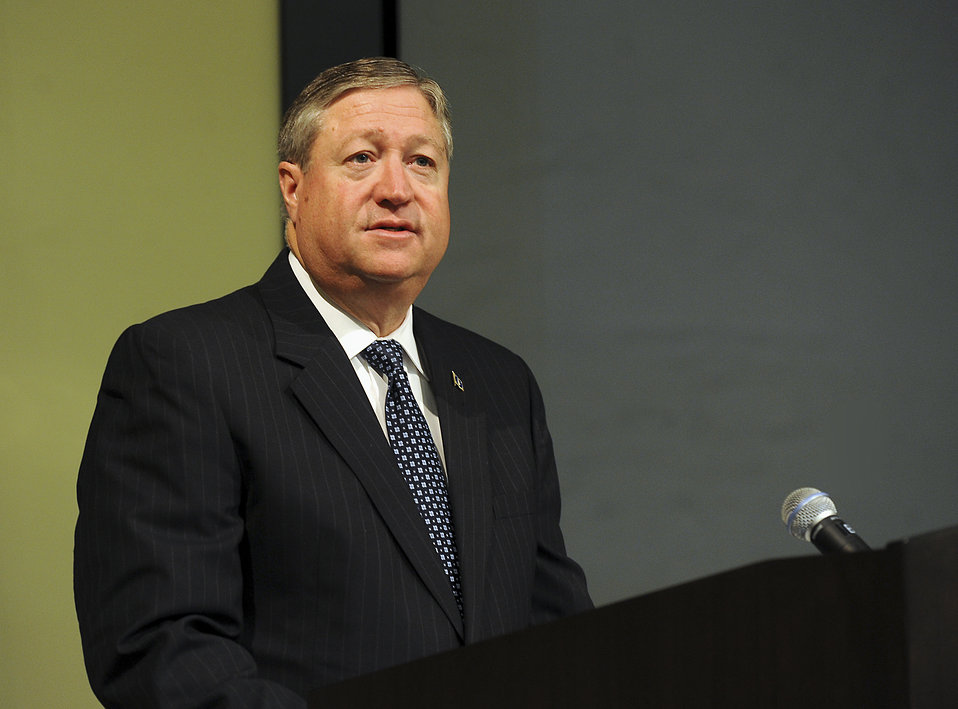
AF leaders gather to address sexual assault prevention, response

Secretary of the Air Force Michael Donley speaks to attendees of the Sexual Assault Prevention and Response Leader Summit at the Smart Building at Joint Base Andrews, Md., on April 18, 2012.